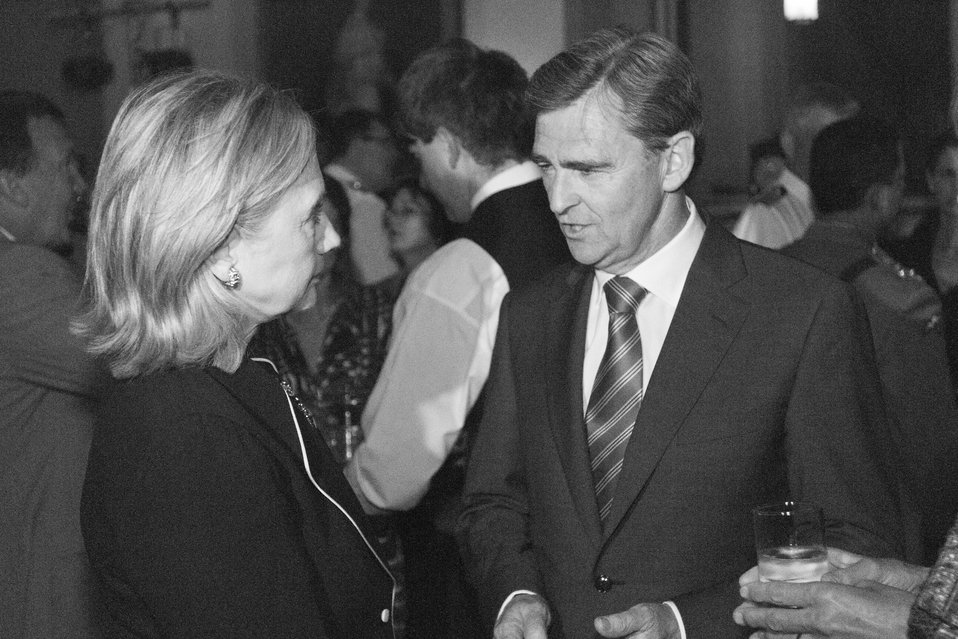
Secretary Clinton Speaks With Australian Premier of Victoria Brumby

U.S. Secretary of State Hillary Rodham Clinton speaks with Australian Premier of Victoria John Brumby at Australian Prime Minister Julia Gillard's reception in Melbourne, Victoria, on November 7, 2010.